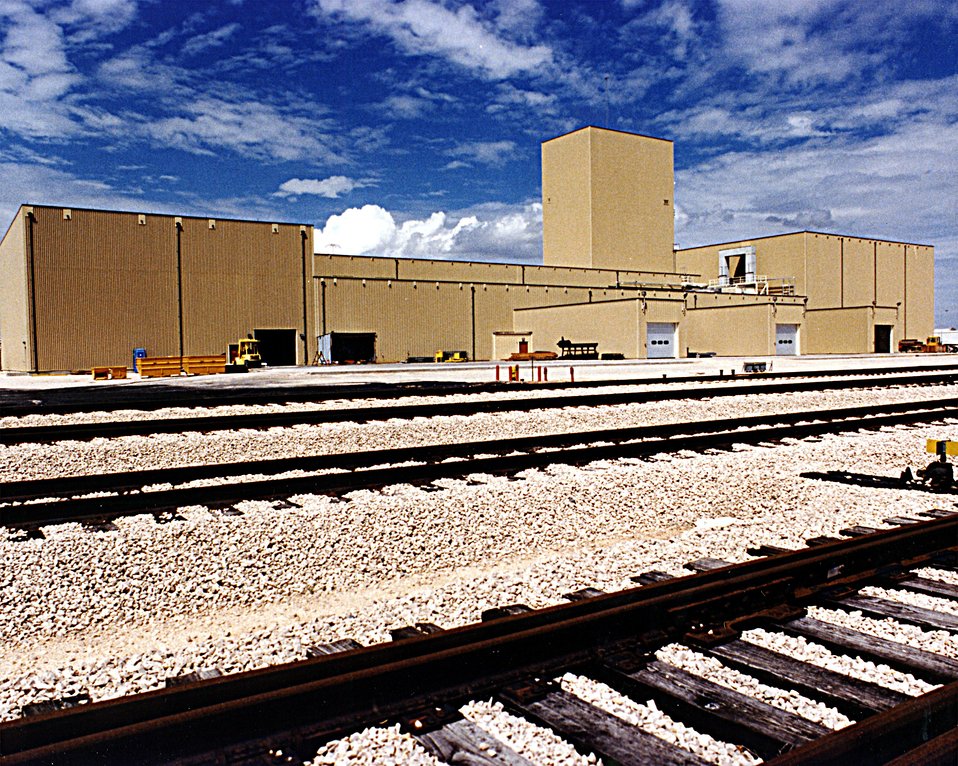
WASTE HANDLING BUILDING.

THE WASTE ISOLATION PILOT PLANT IS A DOE RESEARCH AND DEVELOPMENT FACILITY FOR DEMONSTRATING THE SAFE DISPOSAL OF TRANSURANIC RADIOACTIVE WASTES. TEST SHAFTS HAVE BEEN DRILLED TO A DEPTH OF 2,100 FEET. THE SHAFTS, ONE 6 FEET IN DIAMETER AND THE OTHER 12 FEET IN DIAMETER, PROVIDE AN ENTRY PASSAGE AND VENTILATION TO THE UNDERGROUND SALT ROCK FORMATION THAT IS BEING TESTED TO DETERMINE ITS SUITABILITY FOR RADIOACTIVE WASTE STORAGE.